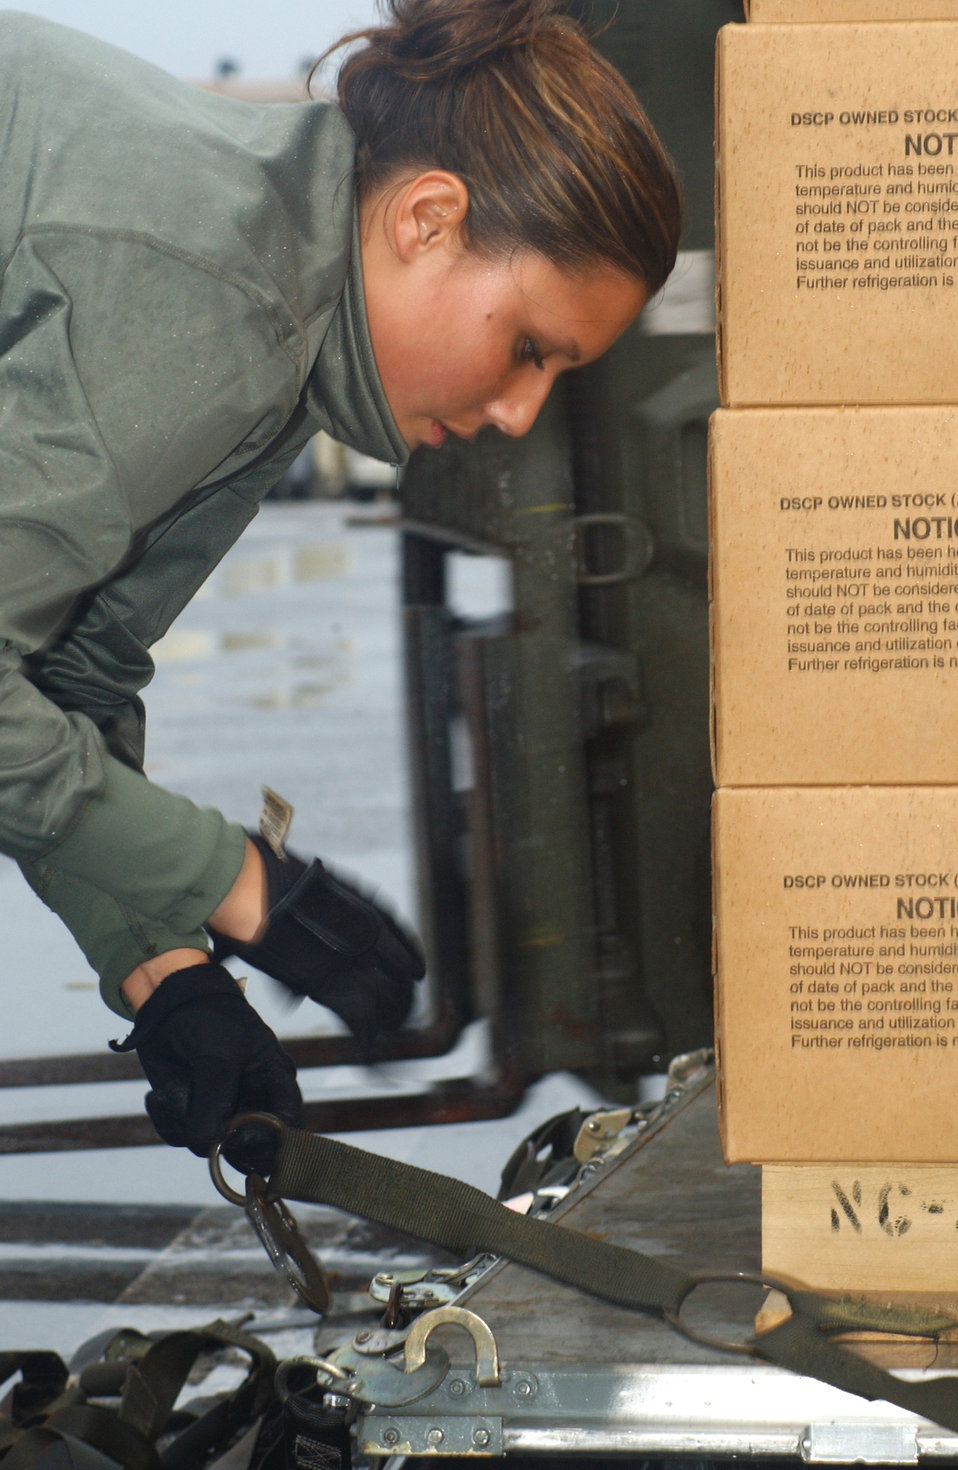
Delivering food

KADENA AIR BASE, Japan -- Airman Autumn McHam attaches cargo netting to an aircraft pallet of packaged meals bound for Southeast Asia. The meals are part of a disaster relief package destined for the area struck by a 9.0 magnitude earthquake Dec. 26 off the coast of Indonesia. The quake caused tsunami waves that killed more than 100,000 people in 12 countries. More than 3,000 cases of meals and four aircraft pallets of fresh water were processed through Kadena's cargo area Dec. 28. Airmen from the 18th Wing here are providing supplies to help with the humanitarian effort. Airman McHam is assigned to the 733rd Air Mobility Squadron.